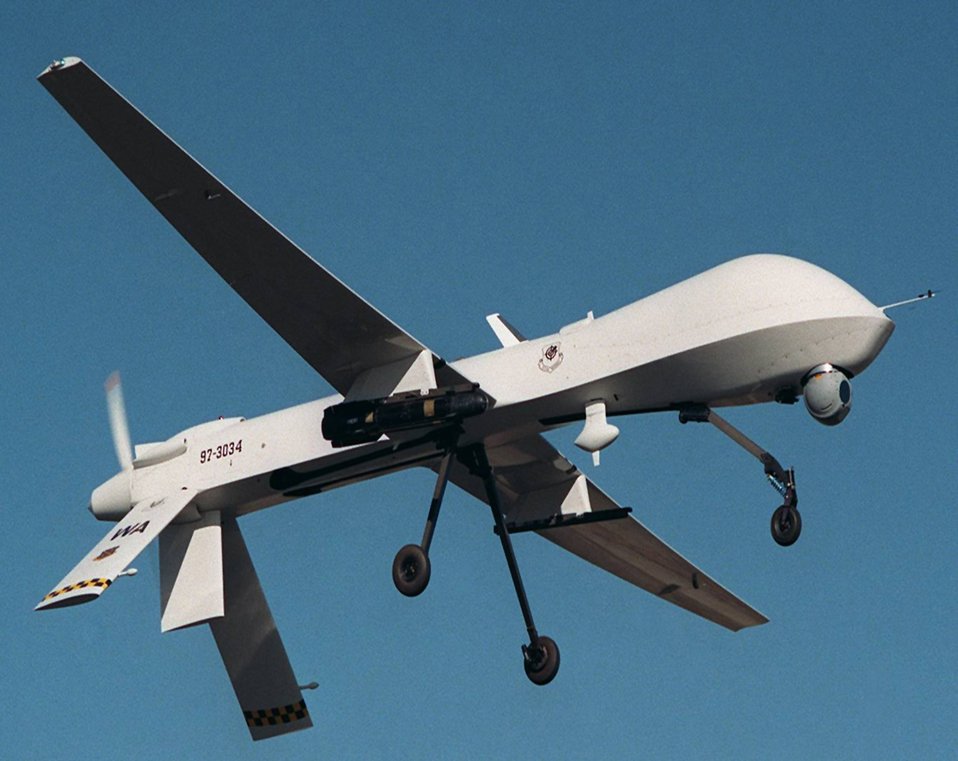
Unmanned aircraft key to future decision superiority

The MQ-1 Predator unmanned aerial vehicle